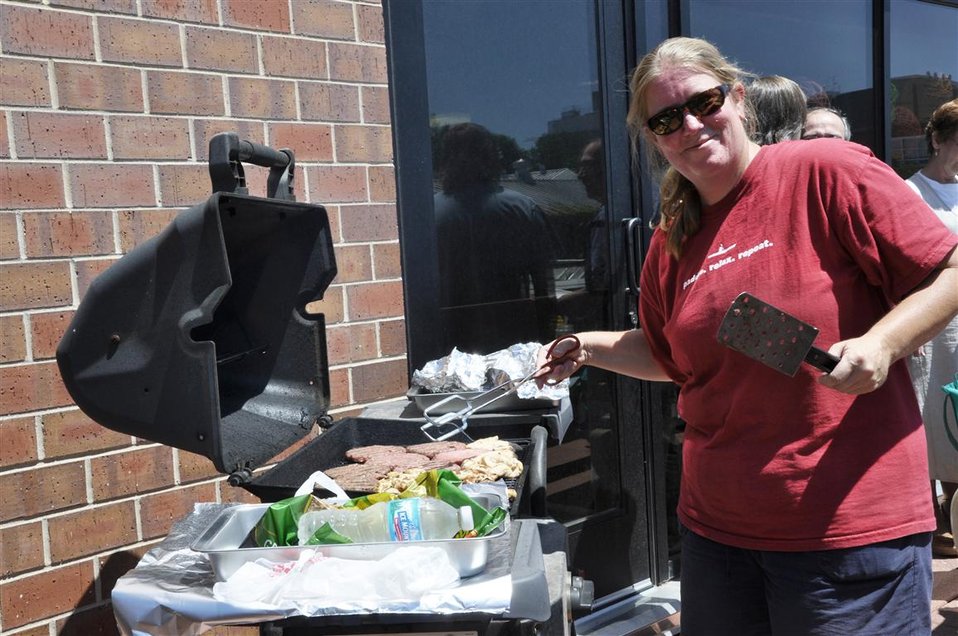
FFF Wisconsin Jane at grill

U.S. Department of Agriculture (USDA) Agricultural Research Service’s (ARS) Dairy Forage Research Center plant molecular geneticist Jane Marita cooks hot dogs, hamburgers, veggie burgers, and bratwurst on the grill to encourage donations for the Feds Feed Families in Madison, WI on July 11, 2012. The Feds Feed Families Food Drive is helping to create awareness across the country of the need for food donations in many communities, especially during the summer months when pantries experience an increase in need and a decrease in donations. Marita and her group have already collected nearly one ton of food during the first month of the food drive. USDA photo Lori Bocher.